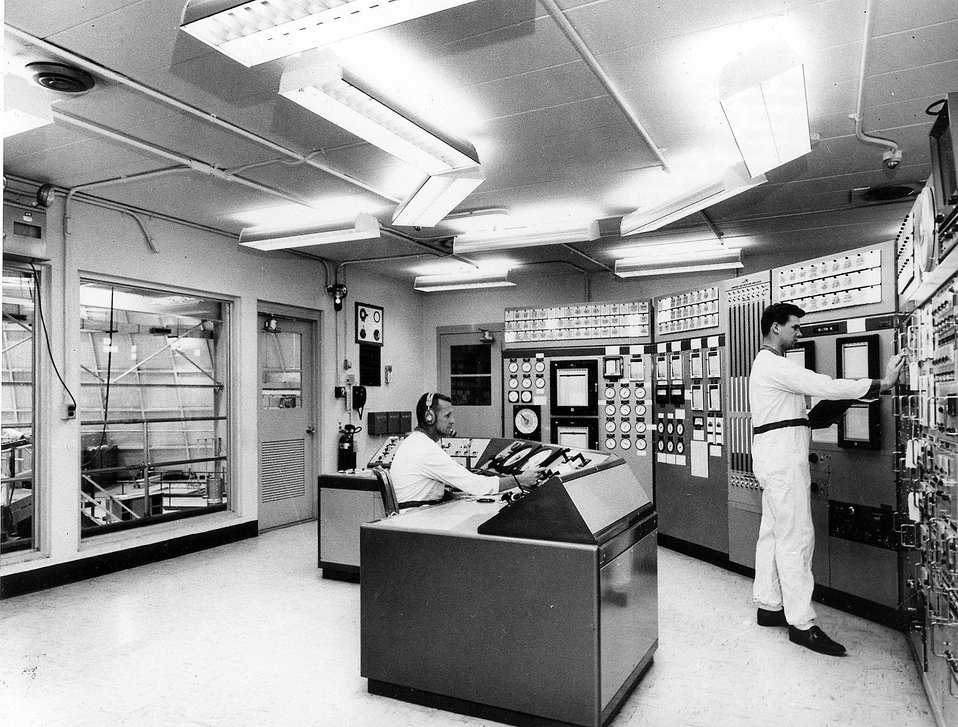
Scene at the High Flux Beam Research Reactor in September 1965 showing equipment and instrumentation being tested by Reactor Division Personnel. c. 1965